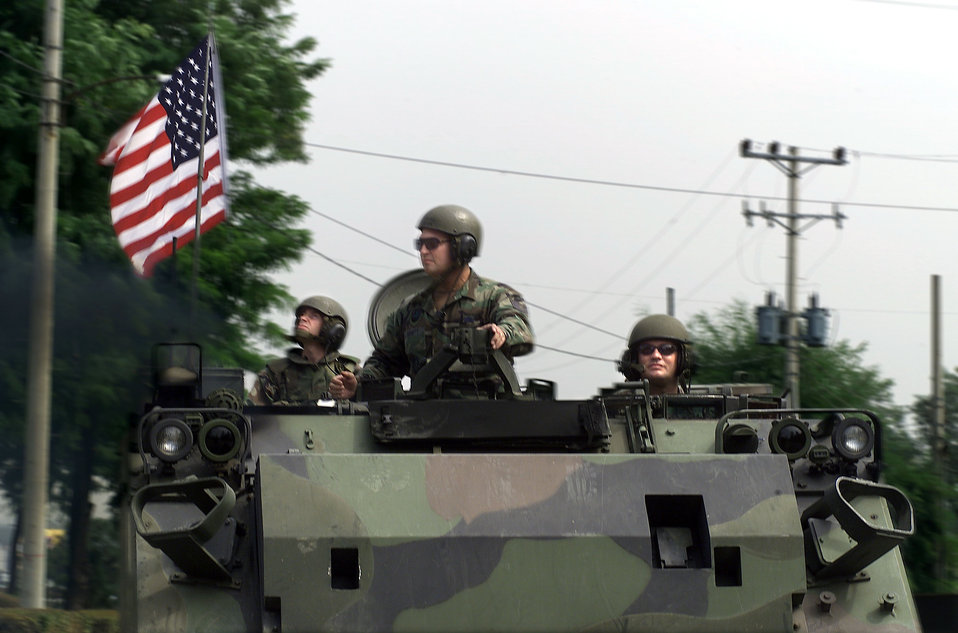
Happy Anniversary

OSAN AIR BASE, South Korea -- Tech. Sgts J.C. Chambers and Mark Arnett, and Airman 1st Class Matt Hecht, 51st Security Forces Squadron, fly the American flag on the back of an armored personnel carrier, Sept. 18, 2001. The APC drove through the streets here on Sept. 18th, the U.S. Air Force's 54th birthday, providing a visible sign of patriotism.